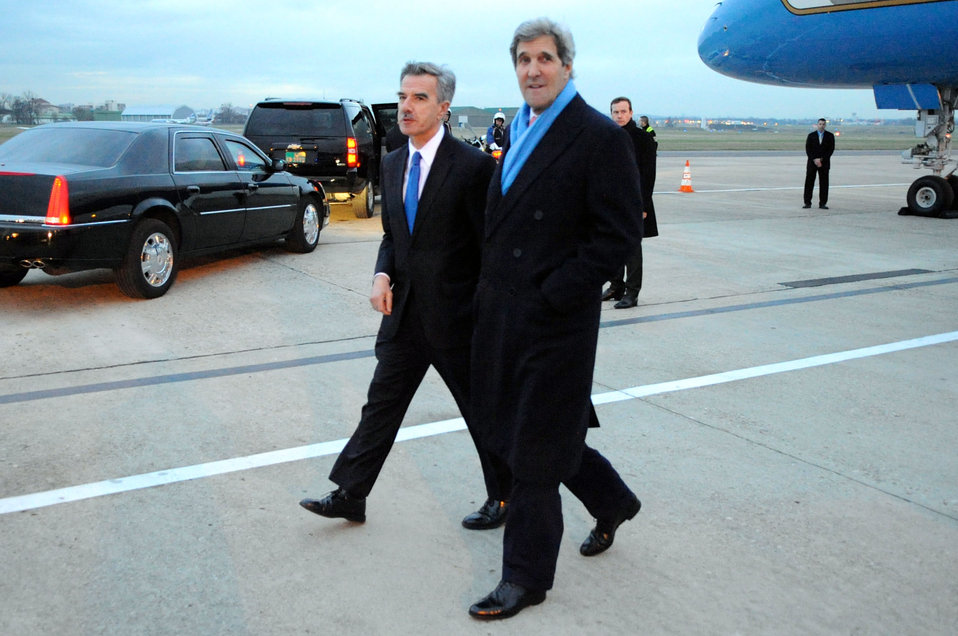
Chargé D'Affaires Taplin Greets Secretary Kerry Upon Arrival in Paris

U.S. Chargé d'Affaires Mark Taplin greets U.S. Secretary of State John Kerry upon his arrival in Paris, France, on February 18, 2014, for a series of meetings related to Syria and Middle East peace talks.